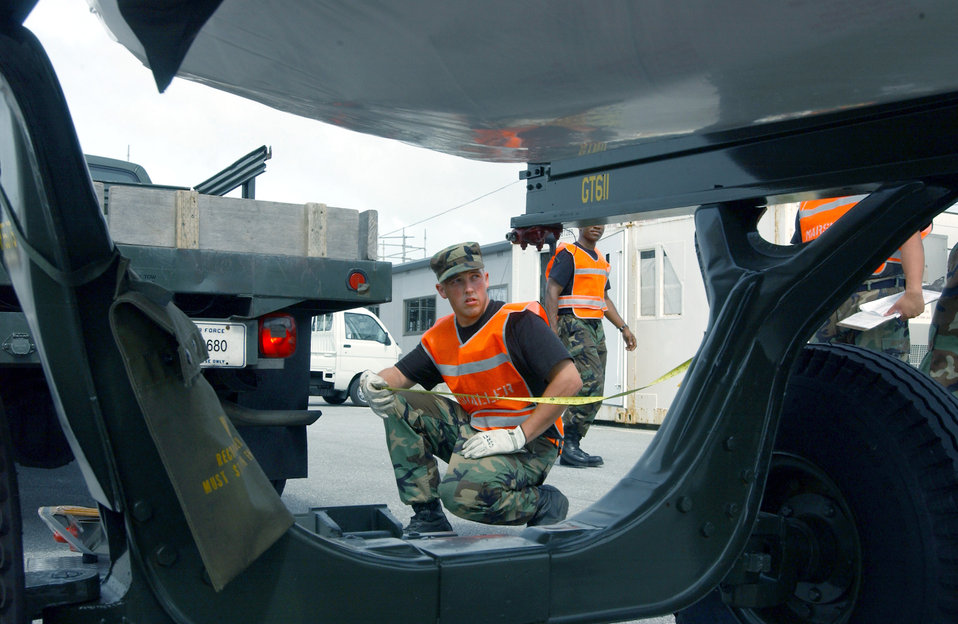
Keeping a safe distance

KADENA AIR BASE, Japan -- Senior Airman Adam Morrison measures the distance between a trailer and the truck towing an aircraft engine here Aug. 23. The scenario is part of the 18th Wing's weeklong operational readiness exercise. Airman Morrison is assigned to the 18th Logistics Readiness Squadron.